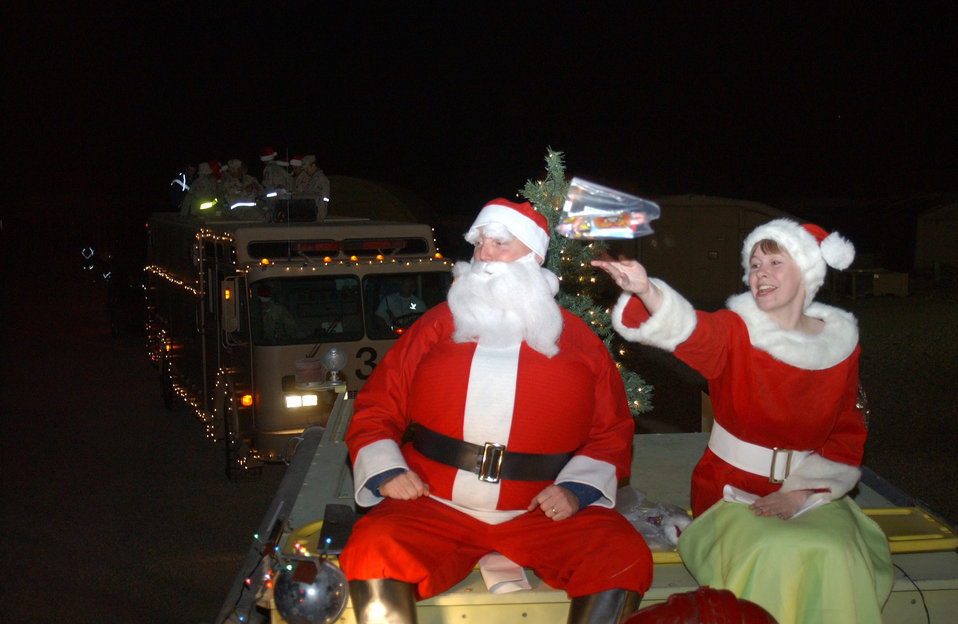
Spreading cheer

ALI BASE, Iraq (AFPN) -- Mrs. Claus (Staff Sgt. Melissa Farrell) tosses a bag of candy to an Airman who promised Santa (Lt. Col. Richard Houghton), he was good this year. Santa, Mrs. Claus and the Care Bear singers (carolers in truck behind Santa's sleigh) toured the base spreading cheer, Ho Ho Ho's and some sweet treats Christmas Eve to all servicemembers deployed here. Sergeant Farrell is in the 407th Expeditionary Services Squadron and Col. Houghton is in the 407th Expeditionary Civil Engineer Squadron.